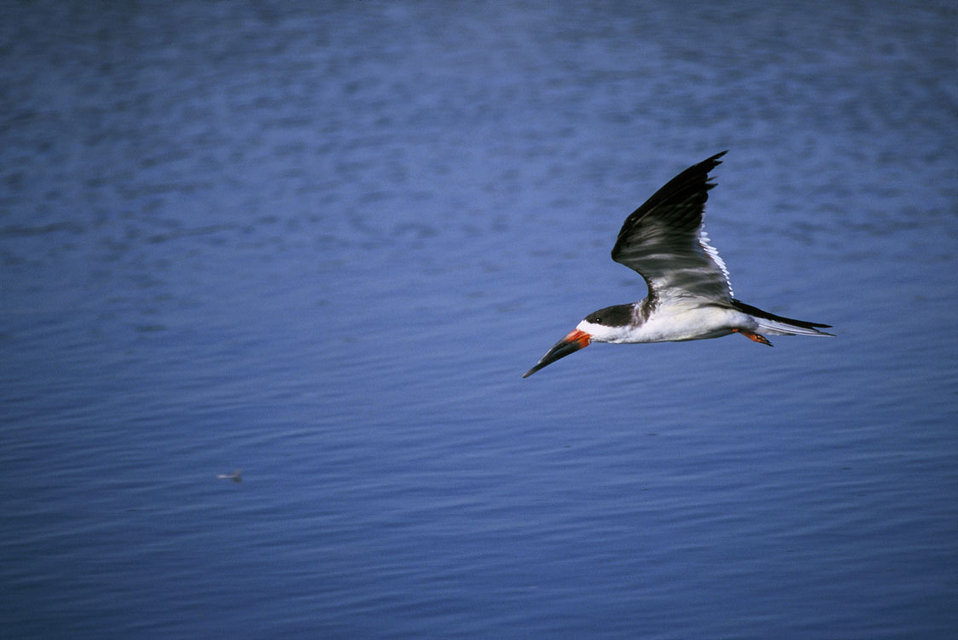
Black skimmer flies low over open water.